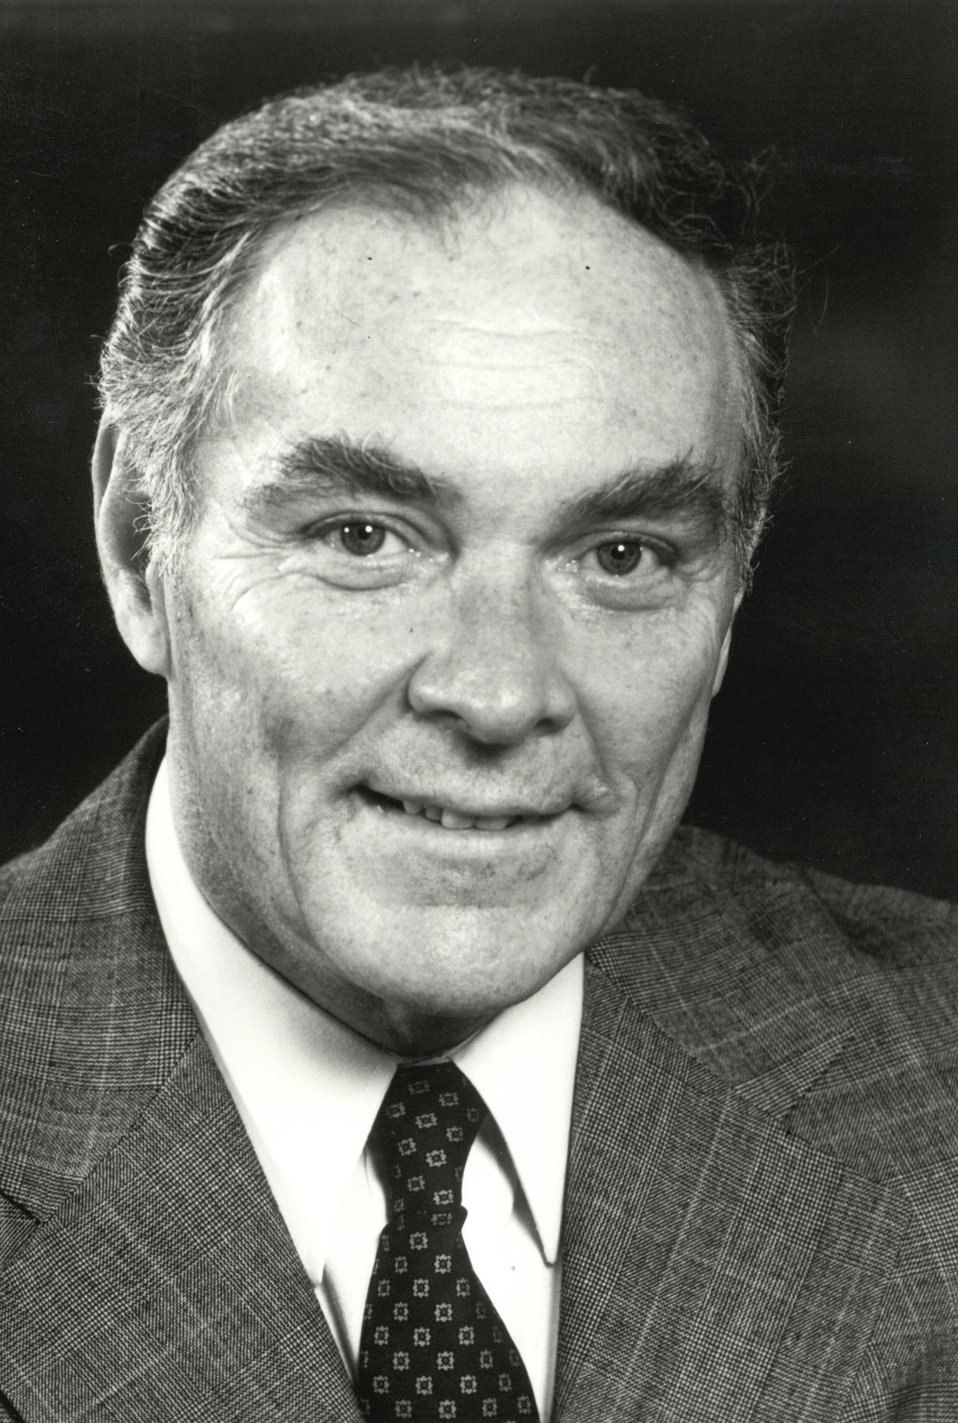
Alexander Meigs Haig, Jr., U.S. Secretary of State, January 22, 1981 to July 5, 1982